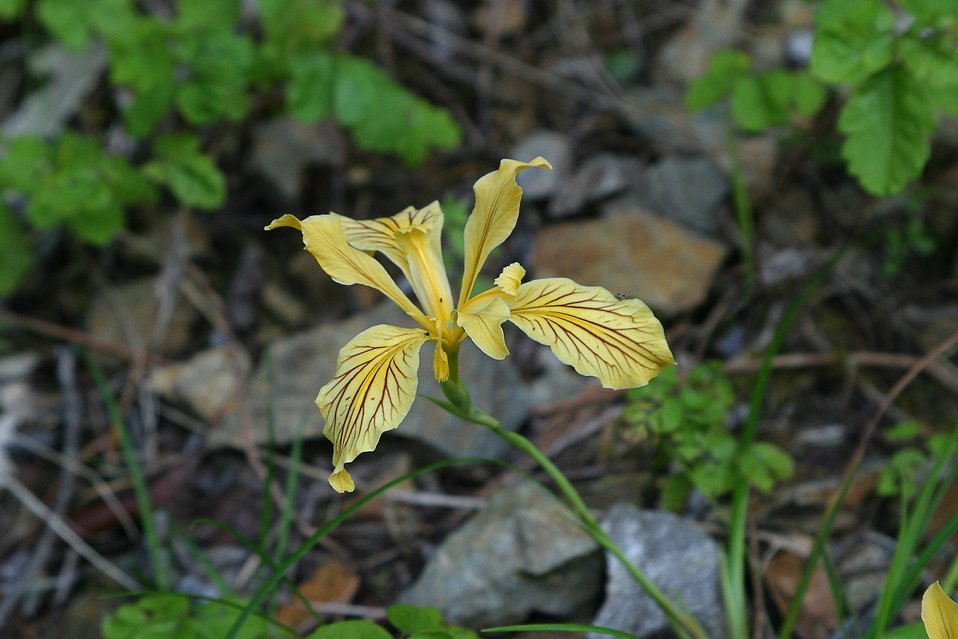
Wild section of the Rogue River from Grave Creek to Foster Bar. 3100 cfs at Grants Pass and 5300 at Agness.